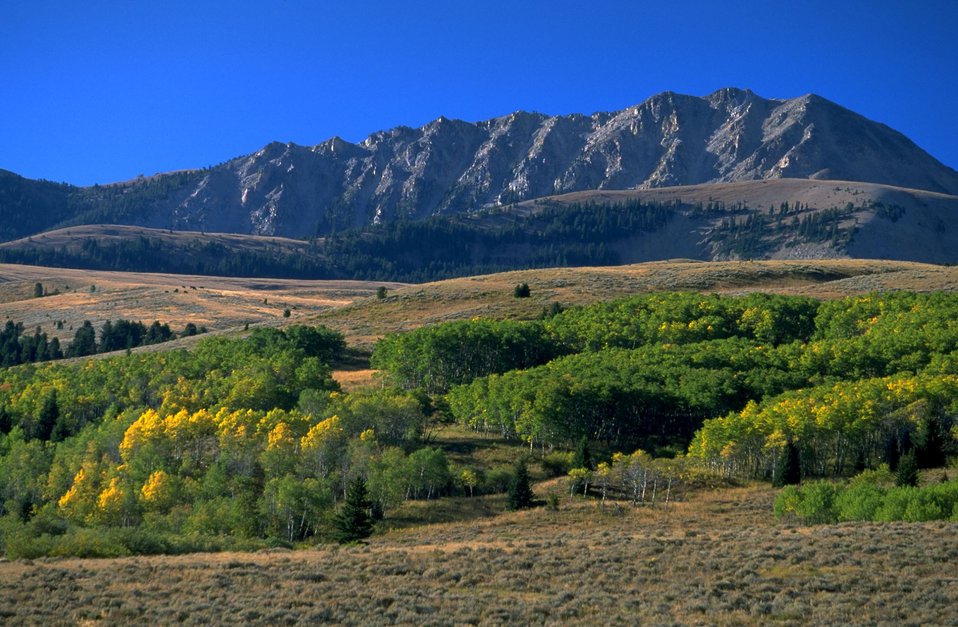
Aspen patch with SawTooth Mountain in background